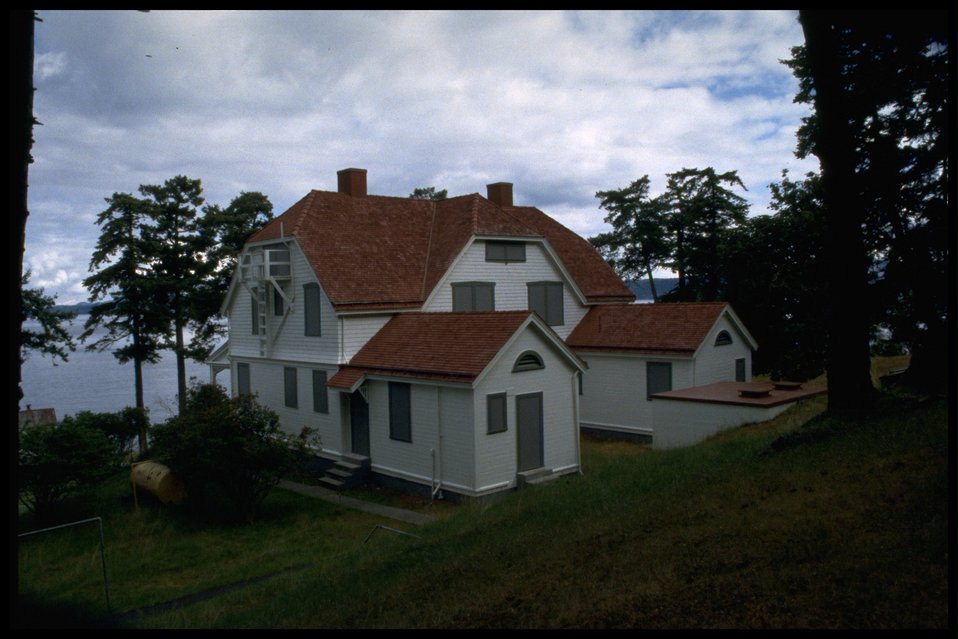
Living quarters at Turn Point. One in a series of ten shots of the living quarters.